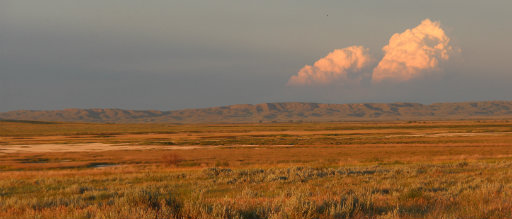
Sunset on Prairie

Sunset in the Bowdoin NWR